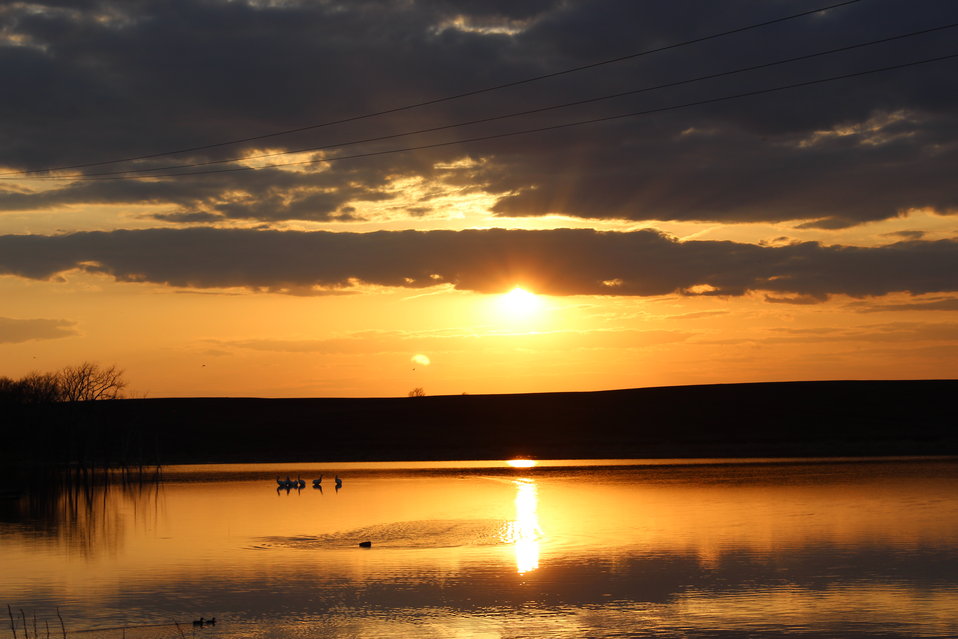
A Touch of Gold

A beautiful sunset in McIntosh County, North Dakota.